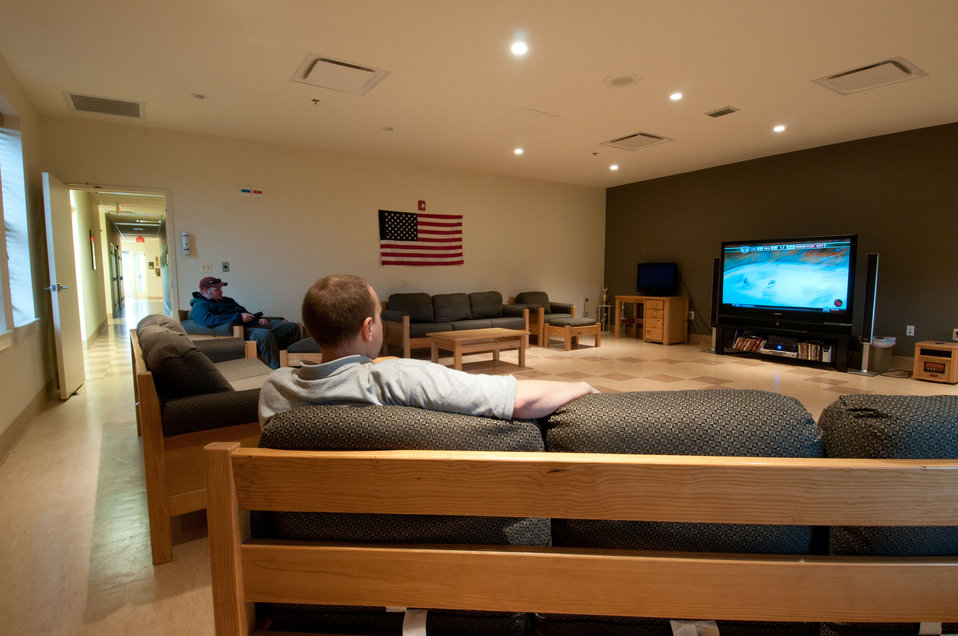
Lt. Mike Eskridge (left) and Technician Jonathan Bankston relax in the recreation room at the Catlett Volunteer Fire - Rescue, Station 7, Catlett, VA, on Wednesday, May 4, 2011.